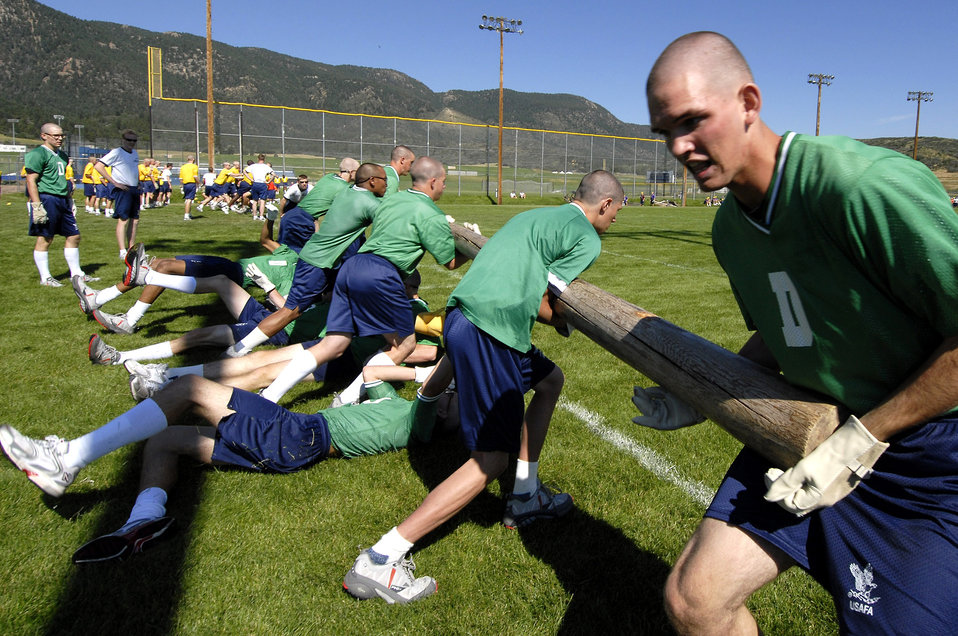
Cadets team up at field day

The transfer of the pole takes perfect timing as basic cadet trainees slide under the pole as a new team takes over during the pole carry event July 14 at U.S. Air Force Academy in Colorado. New cadets are in their first month of training at the Academy and are learning honor, discipline and integrity in addition to physical fitness.